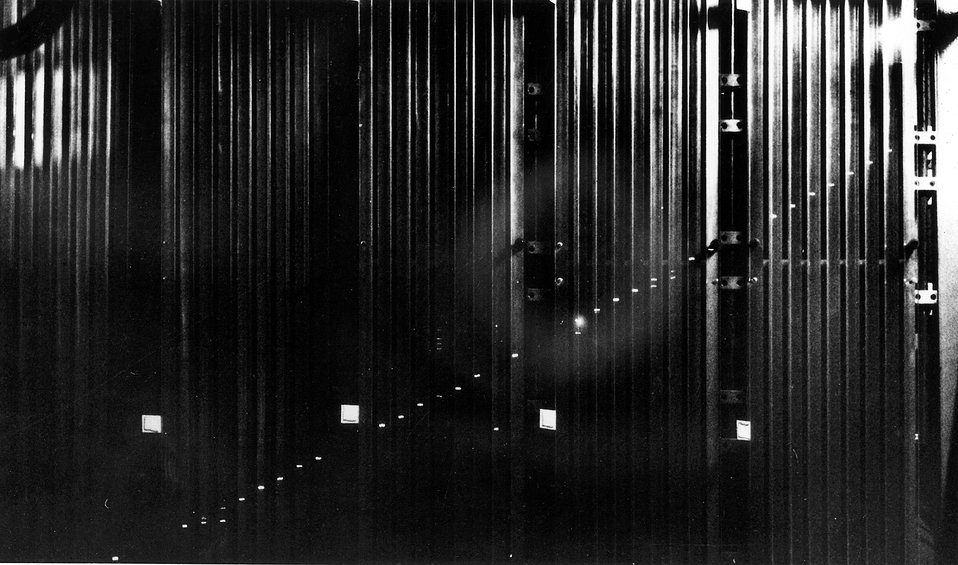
Track of a high energy cosmic ray (mu-meson) shown in the Columbia University spark
chamber at the Alternating Gradient Synchrotron.